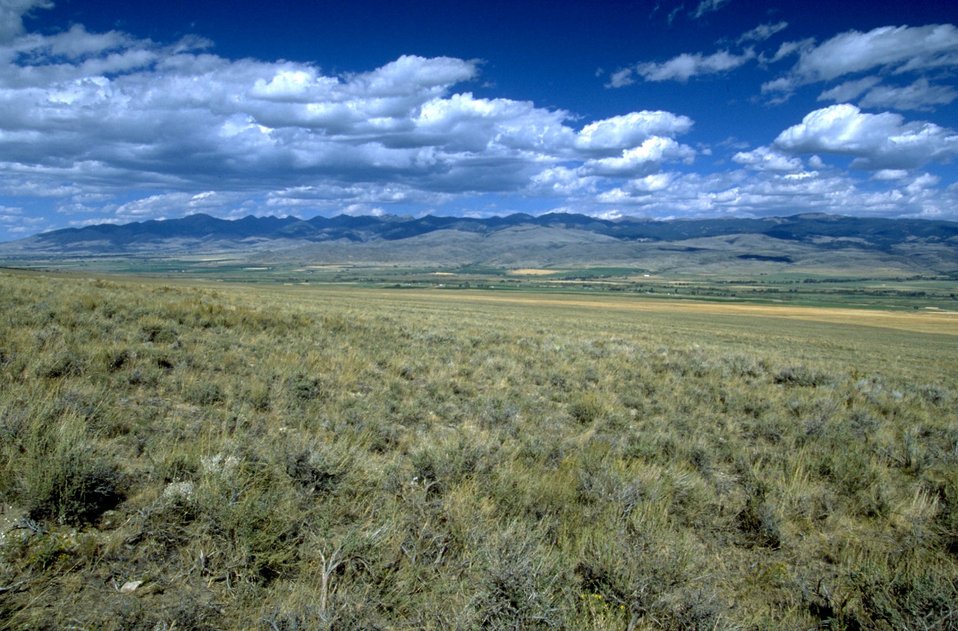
Sage grass hillside overlooking the valley bottom. Interesting cloud formations